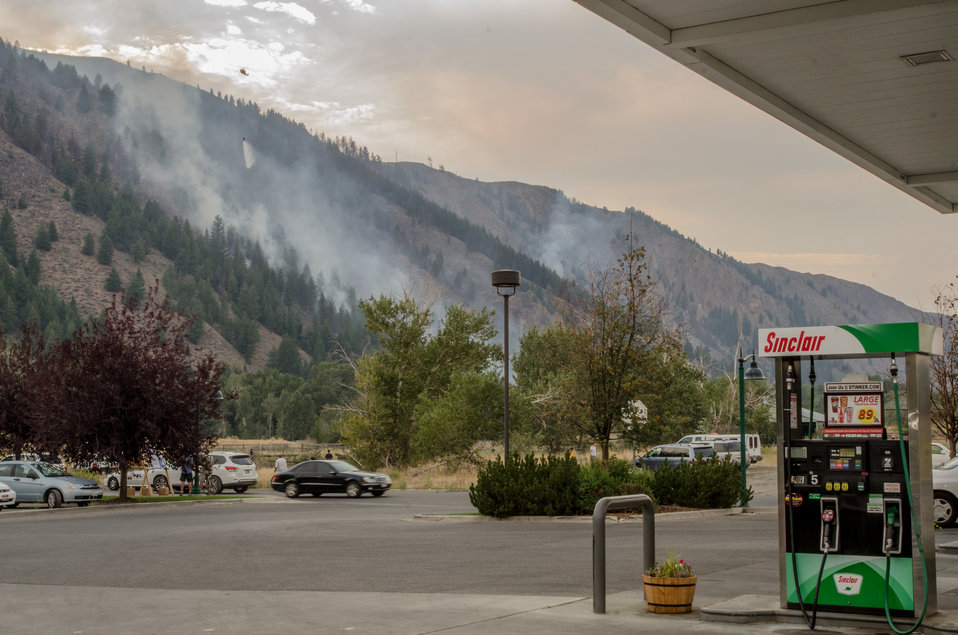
A Bell UH-1H helicopter pilot is seen from a nearby supermarket parking lot and gas station, as water a full load of water is released from the helibucket, below it, the collapsible bucket utilizes a pilot-controlled release valve, that is able to deliver a concentrated column of water from the helicopter to the fire on the Carbonate Ridge, rising behind the Wood River, during Beaver Creek Fire, west of Hailey, ID, on Monday, Aug 19, 2013. These operations can be performed in close proximity to the interface between wildlands and populated area, they help prevent losses due to the these types of fire.